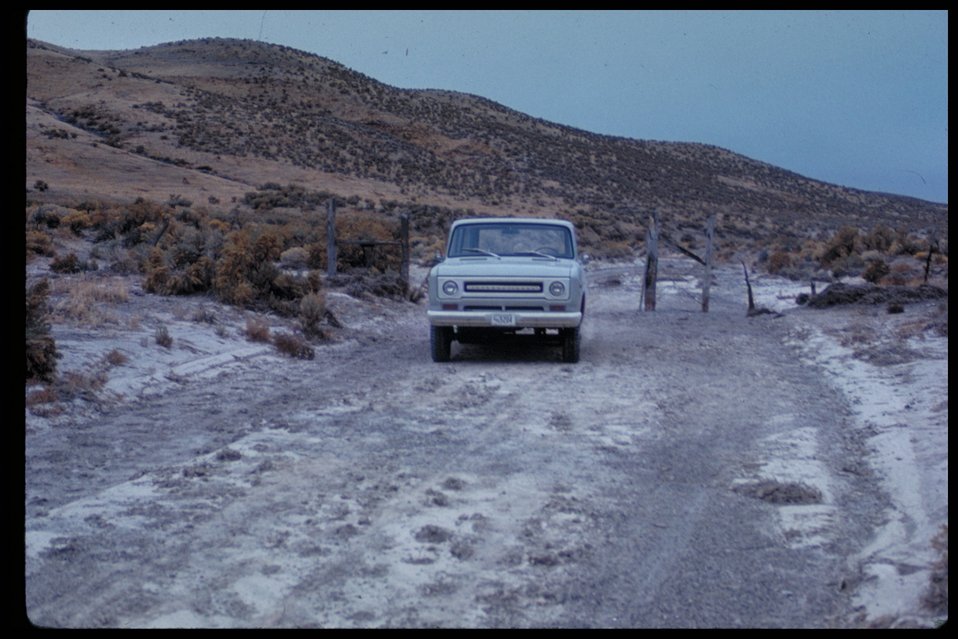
Oregon Trail Lower Snake River District